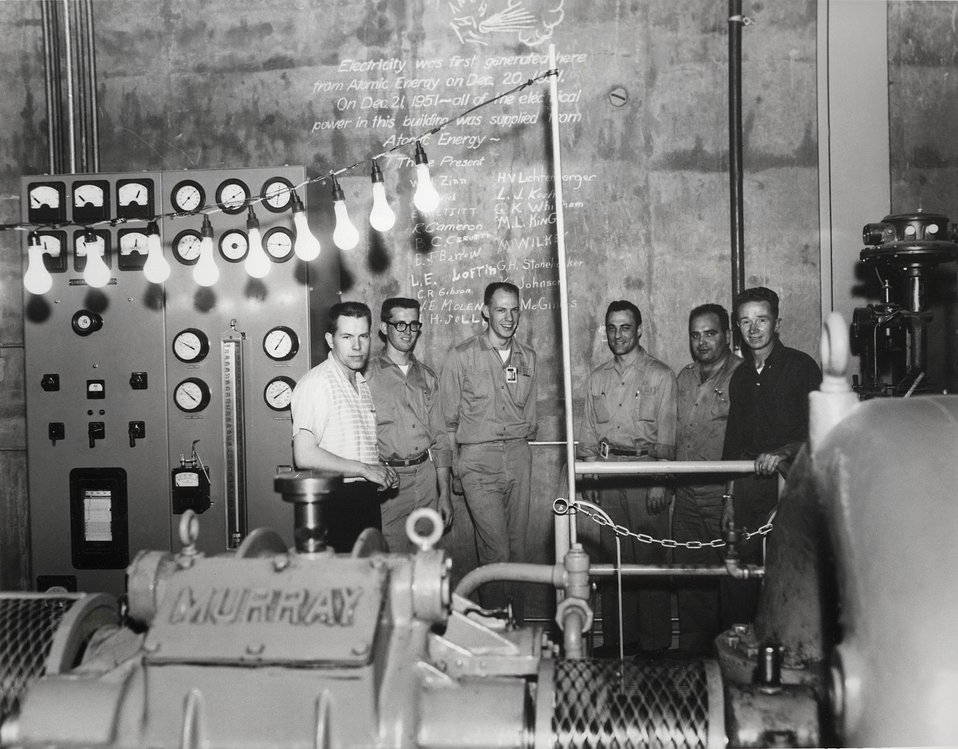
December 20, 1951, Argonne's EBR was used to generate electrical power. This was the first known production of electricity using the heat from nuclear fission
c.1951